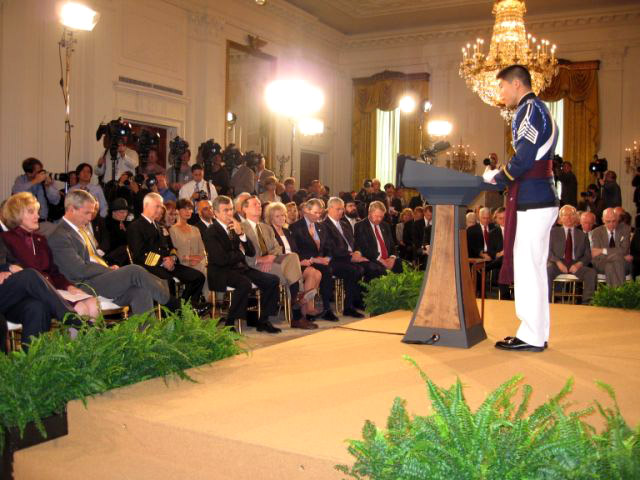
Virginia Tech cadets participate in National Day of Prayer

Virginia Tech Cadet Houston Yu reads the National Prayer from the podium in the East Room May 3 at the White House in Washington, D.C. Cadet Yu was one of five speakers at the ceremony. The cadet is a member of the Virginia Tech Air Force ROTC.